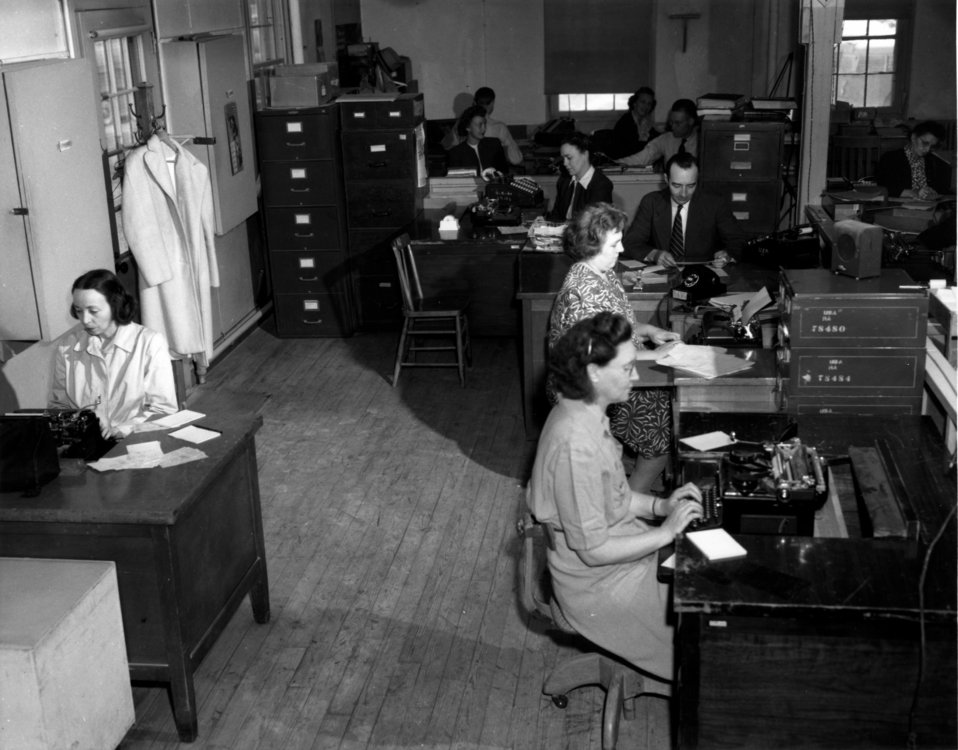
Housing at Oak Ridge